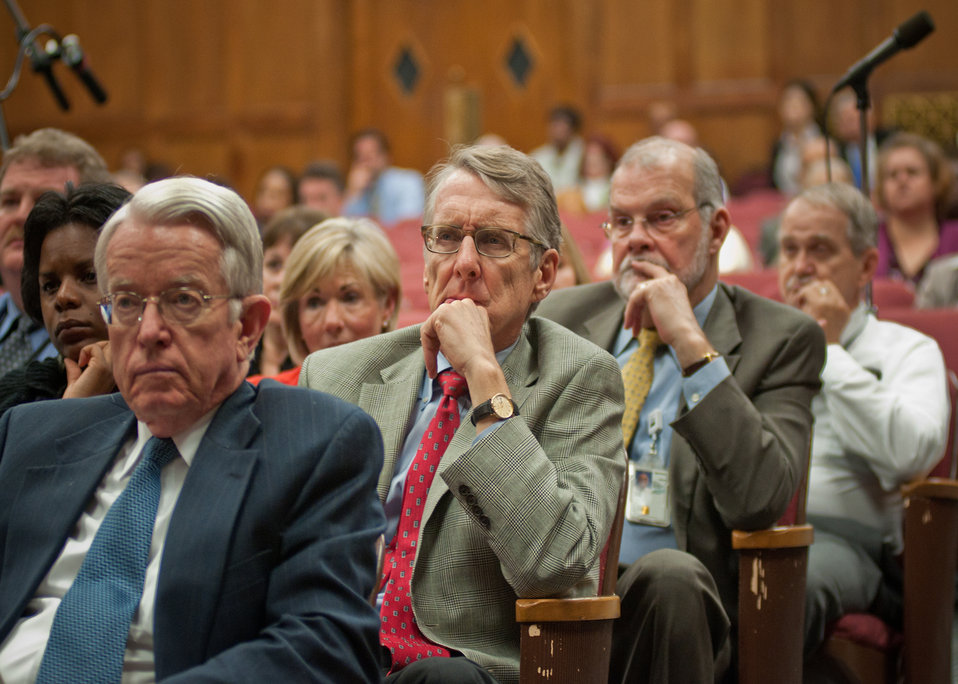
United States Department of Agriculture employees attending the Rural Development Celebration of Service held at United States Department of Agriculture in Washington, DC, on Wednesday, November 16, 2011.